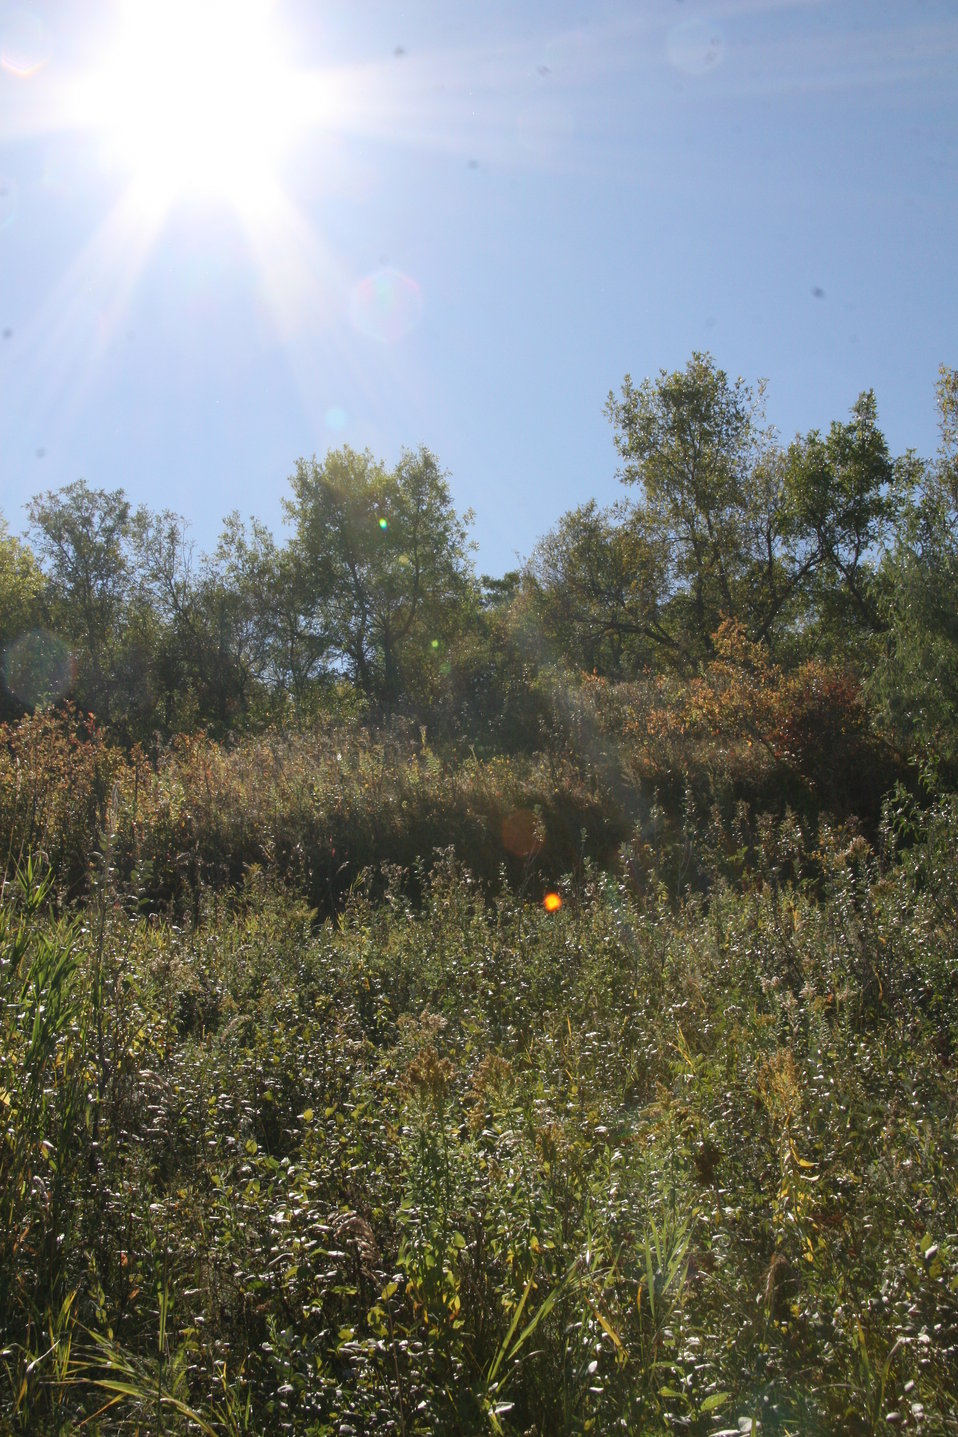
Fall Day - Fall Colors, Scenery & Wildlife on Des Lacs Refuge

A beautiful, warm Fall day on the refuge.